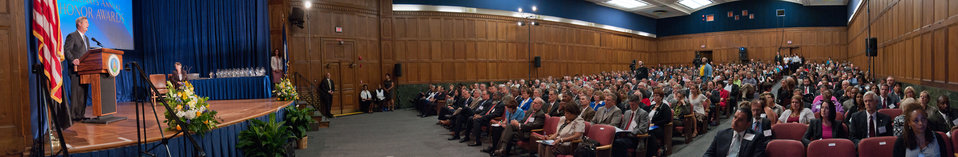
(Download for best viewing) Virtual panorama of the United States Department of Agriculture 63rd Secretary’s Annual Honor Awards ceremony held in the Thomas Jefferson Memorial Auditorium in Washington, D.C. on Wednesday, September 14, 2011. The Armed Forces Color Guard presented the colors and the “National Anthem.” Deputy Assistant Secretary for Administration Oscar Gonzales led the Pledge of Allegiance. Deputy Secretary of Agriculture Kathleen Merrigan provided opening remarks and introduction of Agriculture Secretary Tom Vilsack.